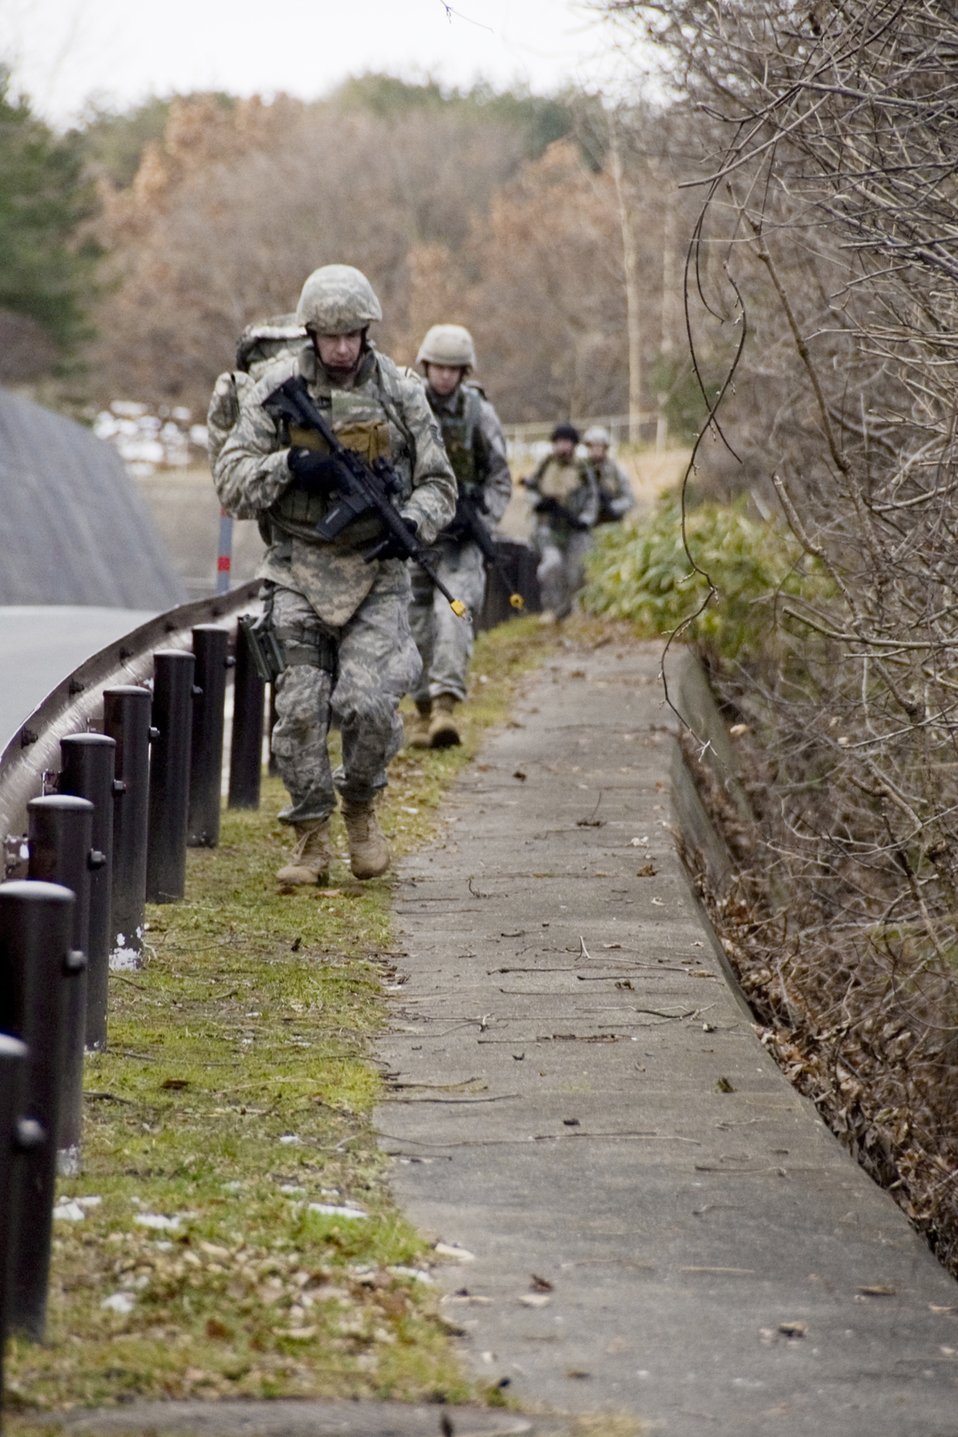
Misawa EOD unit keeps physically fit

Airmen of the 35th Civil Engineer Squadron Explosive Ordnance Disposal flight march Jan. 8, 2010, at Misawa Air Base, Japan. Ruck marches are part of the flight's pre-deployment training, preparing members for patrol support.